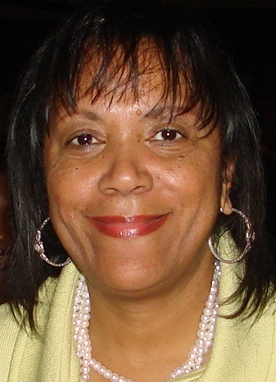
Annie Whatley, Deputy Director, Office of Minority Economic Impact, Office of Economic Impact and Diversity